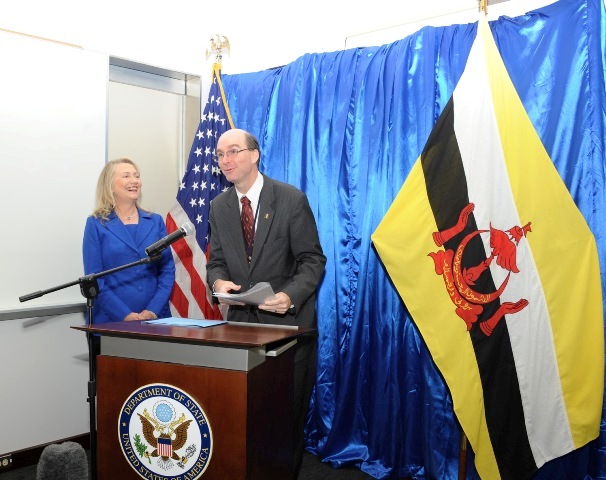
Ambassador Shields Welcomes Secretary Clinton to the U.S. Embassy

U.S. Ambassador to Brunei Daniel Shields welcomes U.S. Secretary of State Hillary Rodham Clinton to the U.S. Embassy in Bandar Seri Begawan, Brunei, September 7, 2012.